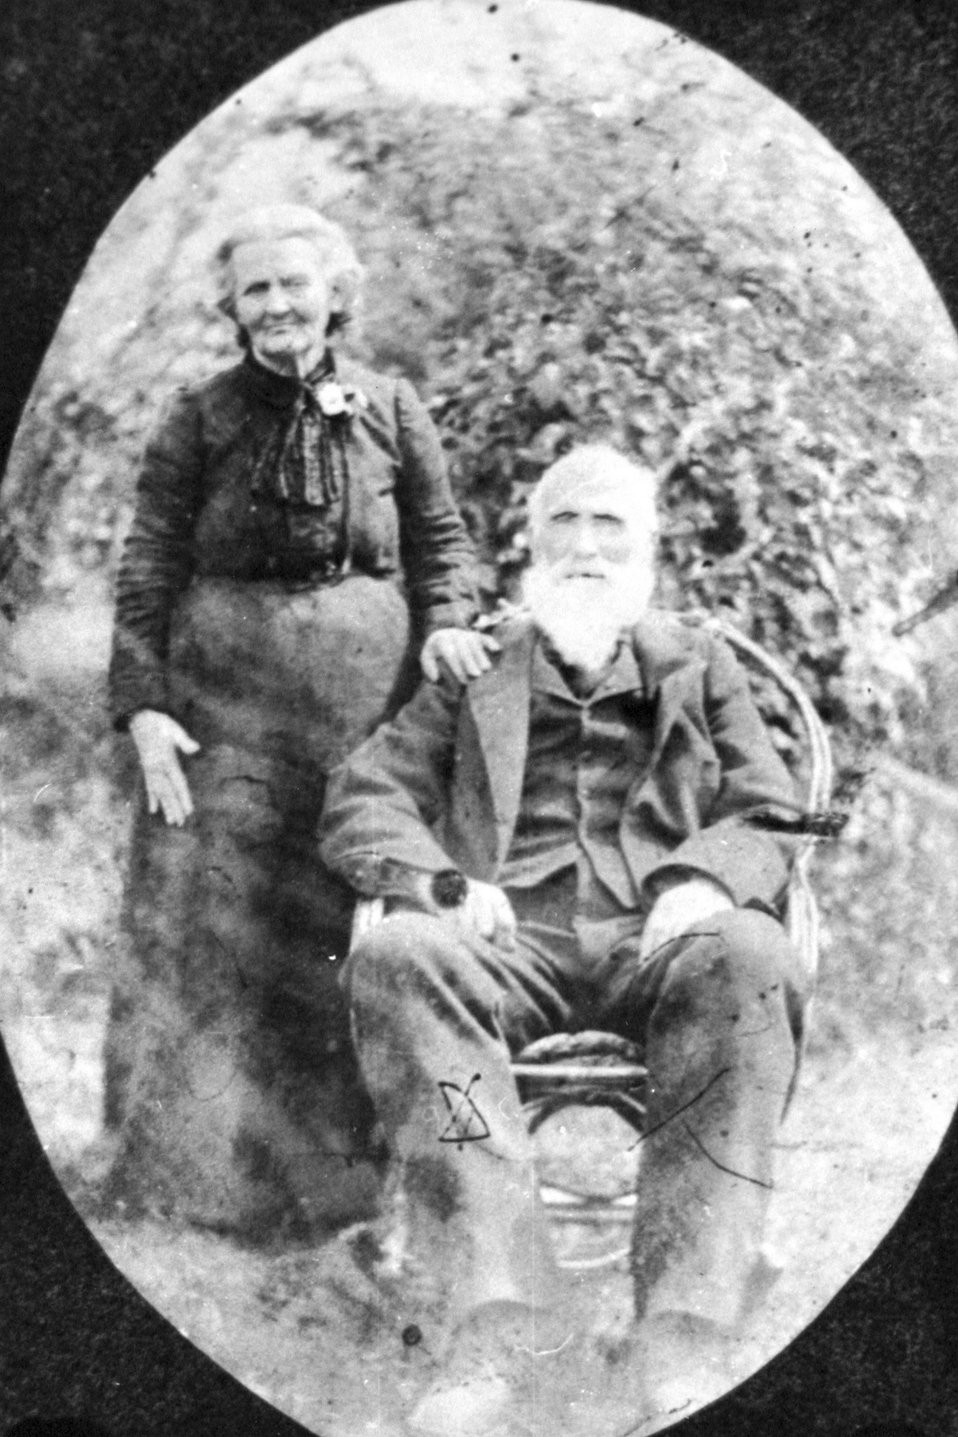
Robert and Almira Cook. He was county commissioner for Jackson County when the court house was built. Glen Woodlridge's grand parents..